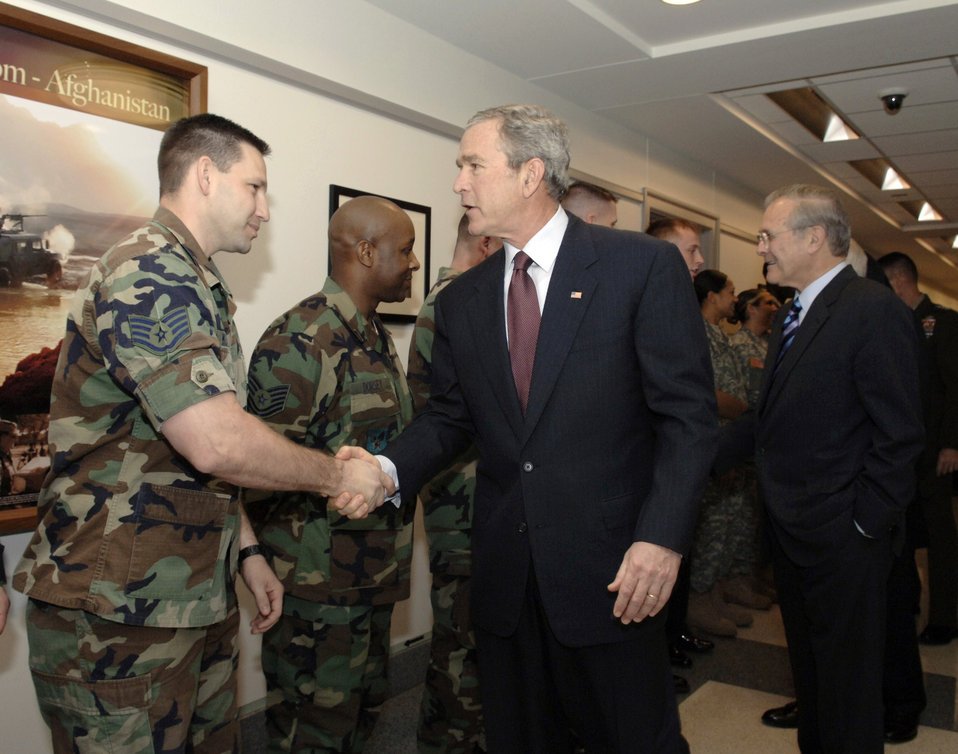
Shaking hands

WASHINGTON (AFPN) -- President George Bush shakes hands with Staff Sgt. David Kolcun of the Air Force Surgeon General's office after the president met with senior defense officials in the Pentagon today. Defense Secretary Donald Rumsfeld (far right), and other defense leaders, also stopped to shake hands with enlisted members from all the services. The president met with Secretary Rumsfeld to discuss the war in Iraq.